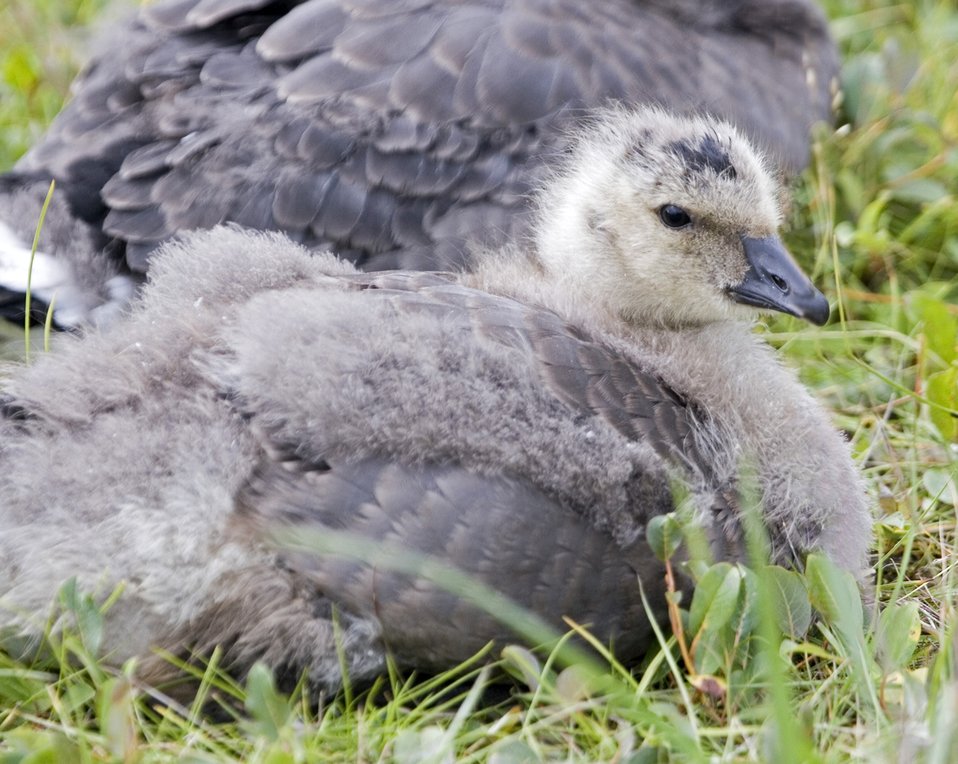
Cackling Canada goose gosling

Close view of a cackling Canada goose gosling.